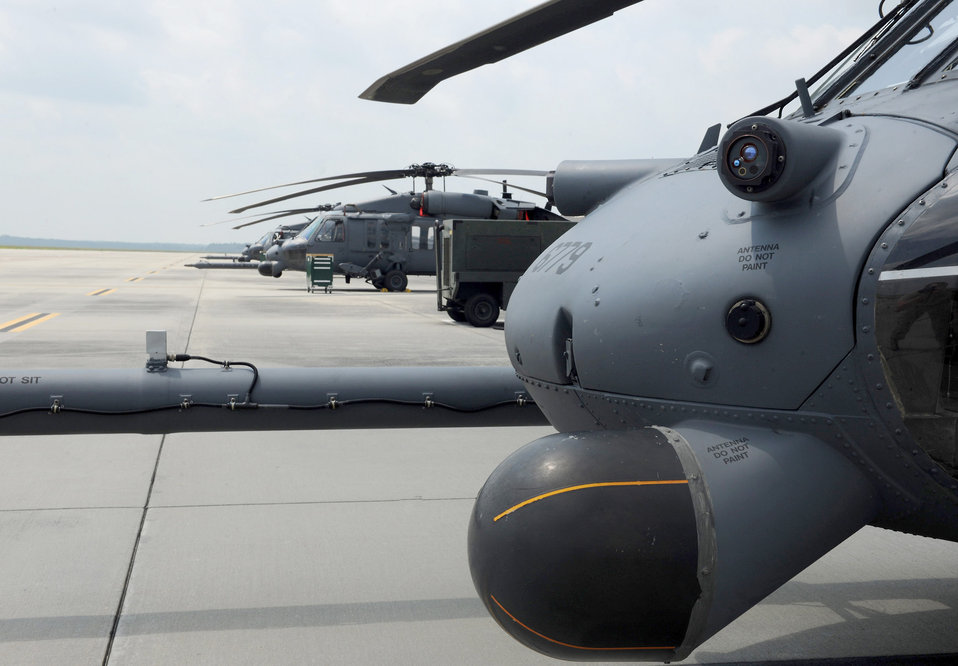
HH-60G munitions training

Three HH-60G Pave Hawks park on the flightline Aug. 25, 2010, at Moody Air Force Base, Ga. Airmen with the 41st Rescue Squadron are currently training for deployment.